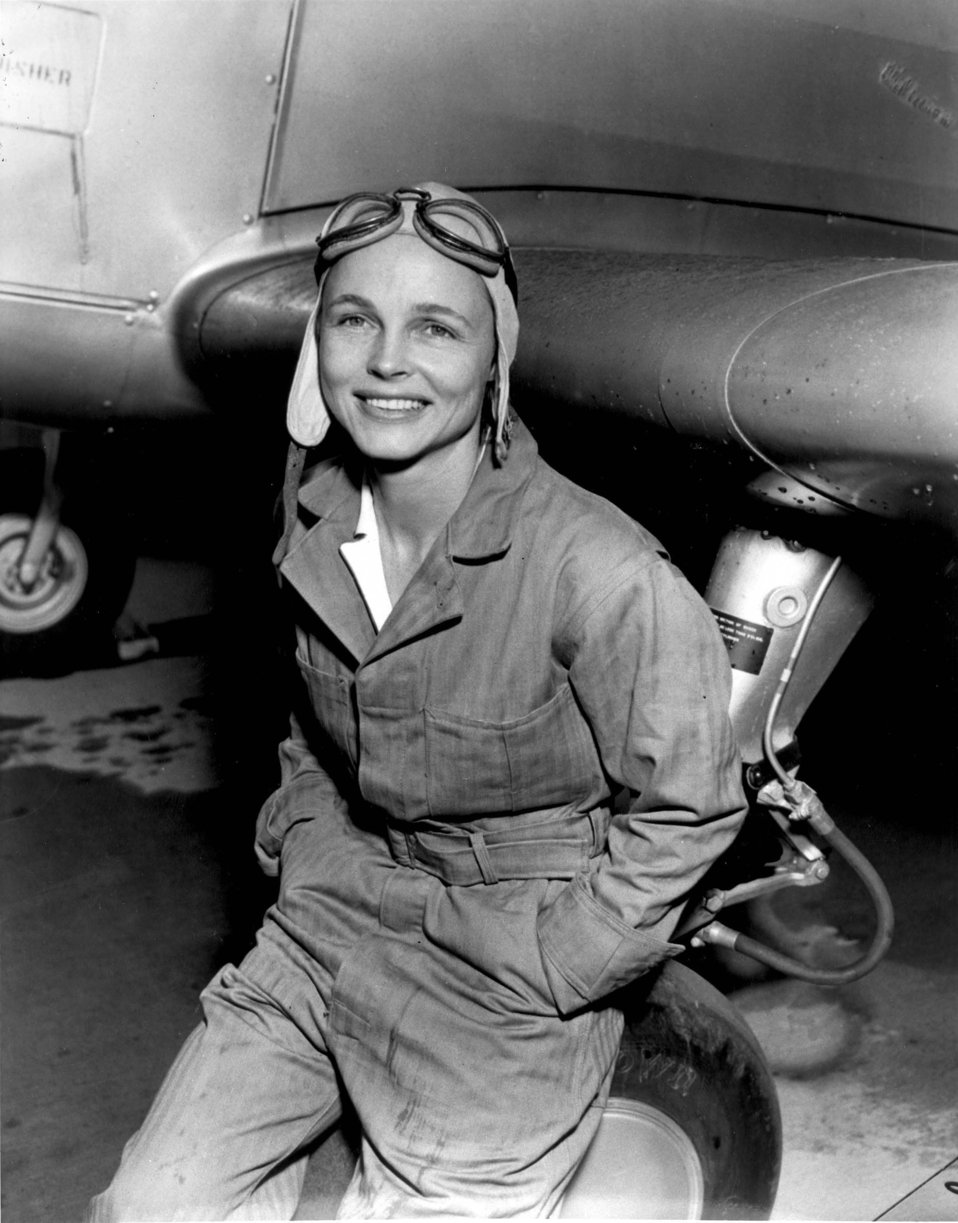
Betty Gillies

EARLY YEARS -- Mrs. Betty Gillies was the first woman pilot to be